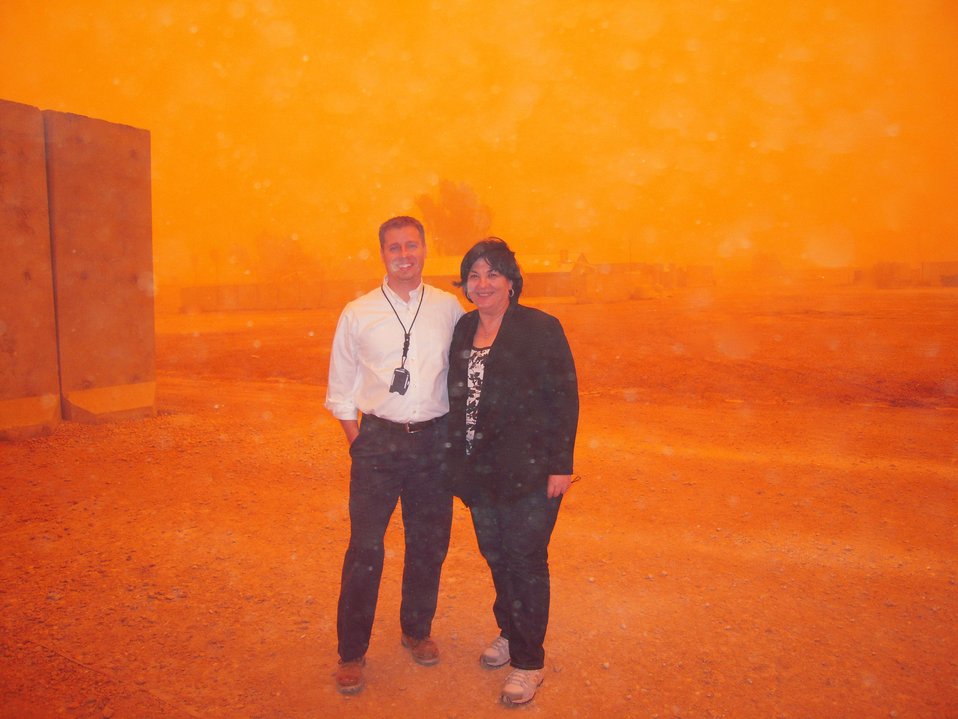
PRT Anbar Team Members Jason Khile and Paige at Camp Ramadi

PRT Anbar Public Diplomacy Officer Jason Khile, stands with PRT Anbar Interpreter Paige at Camp Ramadi during a dust storm in Anbar Province, Iraq, February 22, 2010.